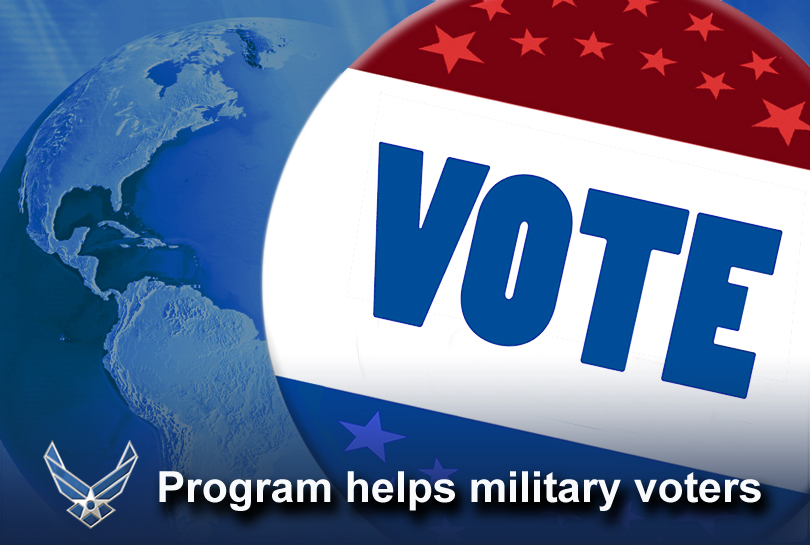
Military voters